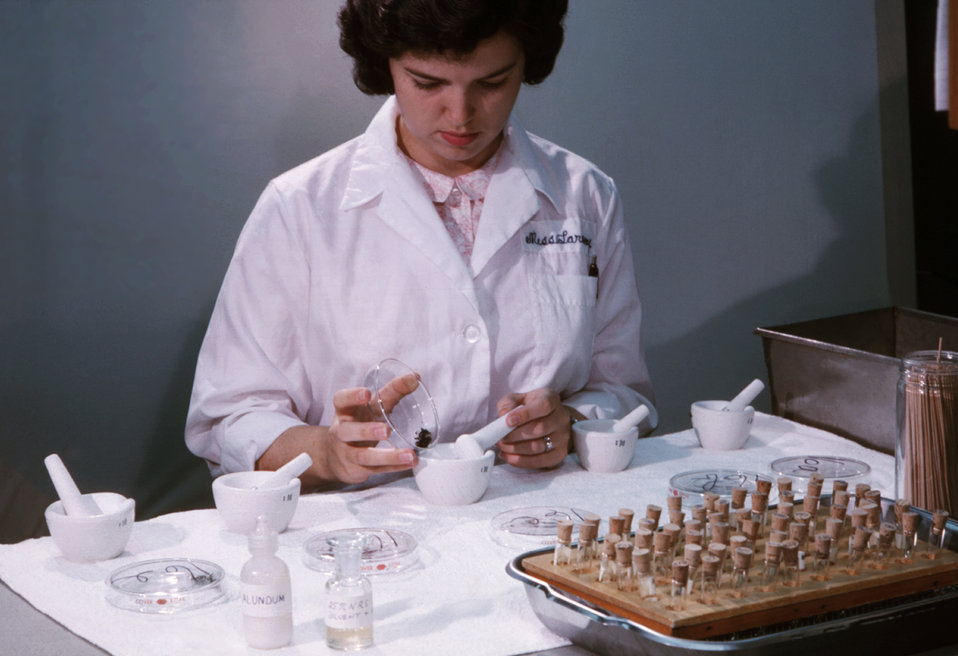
This CDC laboratory technician is shown here grinding mosquitoes with a mortar and pestle during an arbovirus study.